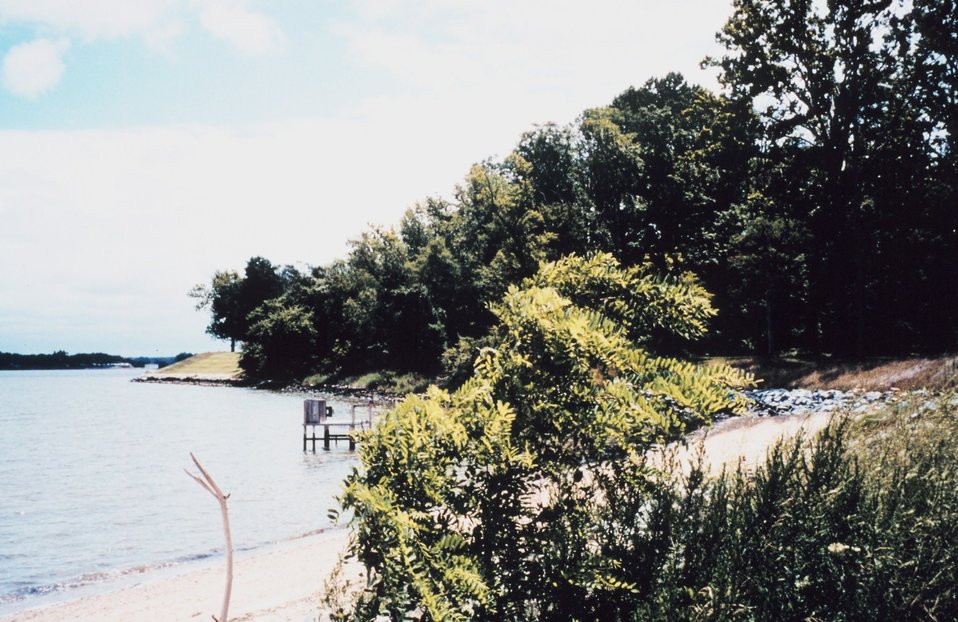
The shoreline at the University of Maryland Horn Point Laboratory is a combination of sandy beach and rock revetment.